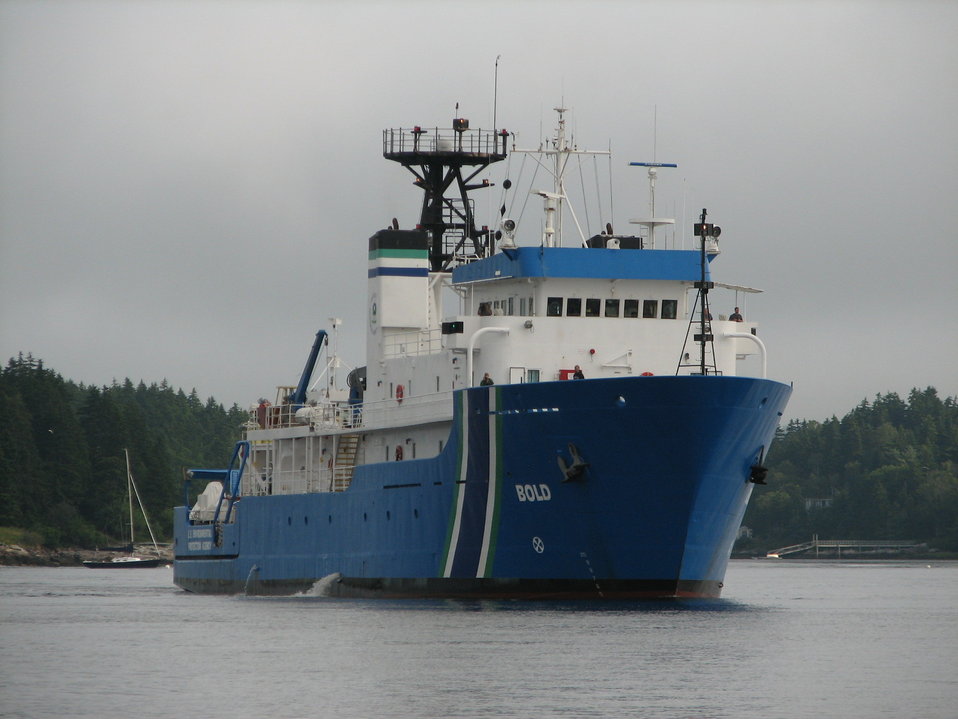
August 2009, Bold Sighting by Fort Popham, Phippsburg Maine

Another view from the Popham Beach shoreline.